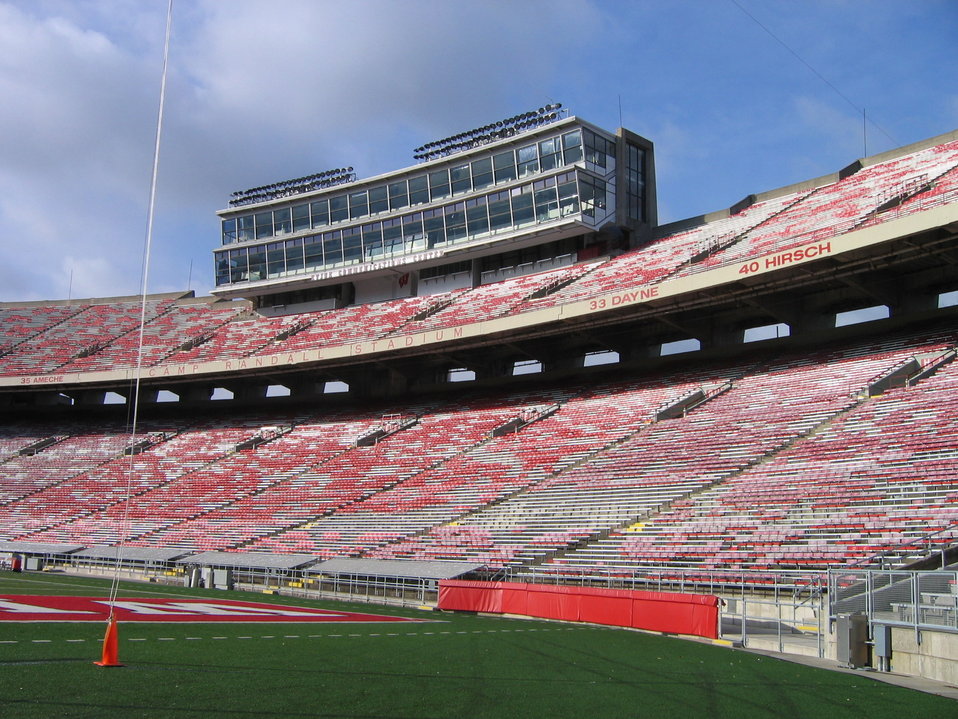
Deutsch: Das Stadion im November 2006. November 2006.